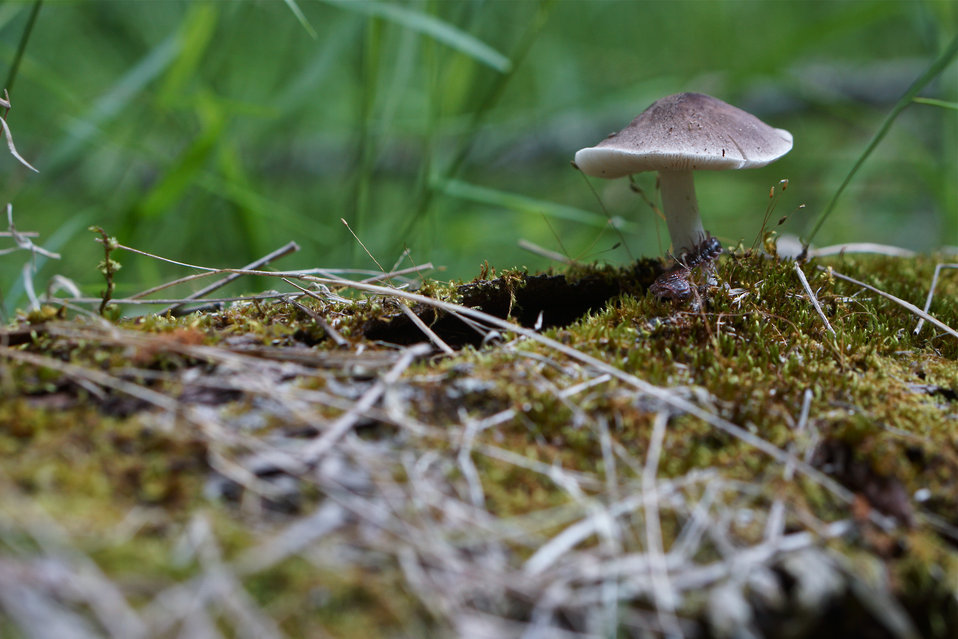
Mushroom with a centipede

In May, bog conservationists from Tennessee, North Carolina, and Georgia convened in the north Georgia mountains for the spring, 2014 meeting of the Bog Learning Network. The event provided an opportunity for biologists to see, first hand, the result of management efforts at two north Georgia bogs. More importantly, the outings provided an opportunity to share innovative approaches to bog management, such as the role of the Georgia Plant Conservation Alliance in conserving rare plants and coordinating a cadre of volunteers to work on bog management.

The Bog Learning Network was convened in the winter of 2013 as a way to bring together people working for bog conservation across the Southern Appalachians. Southern Appalachian bogs are one of North America’s rarest habitats and home to many rare plants and animals.